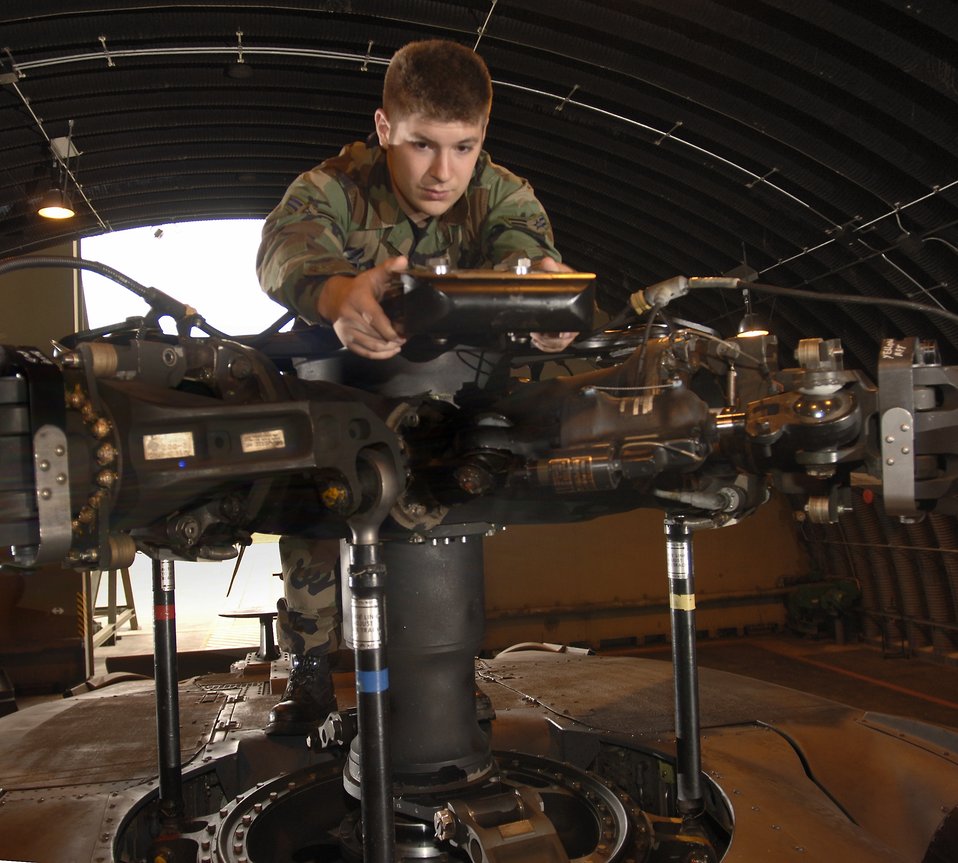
Rescue unit faces moving challenges

Airman 1st Class Matt Maurer inspects the main rotor of an HH-60 Pave Hawk helicopter at Royal Air Force Lakenheath, England, on Aug. 2. The Airman is with the 56th Aircraft Maintenance Unit. The unit supports the 56th Rescue Squadron, which moved to this fighter base from Keflavik Air Base, Iceland, in May.